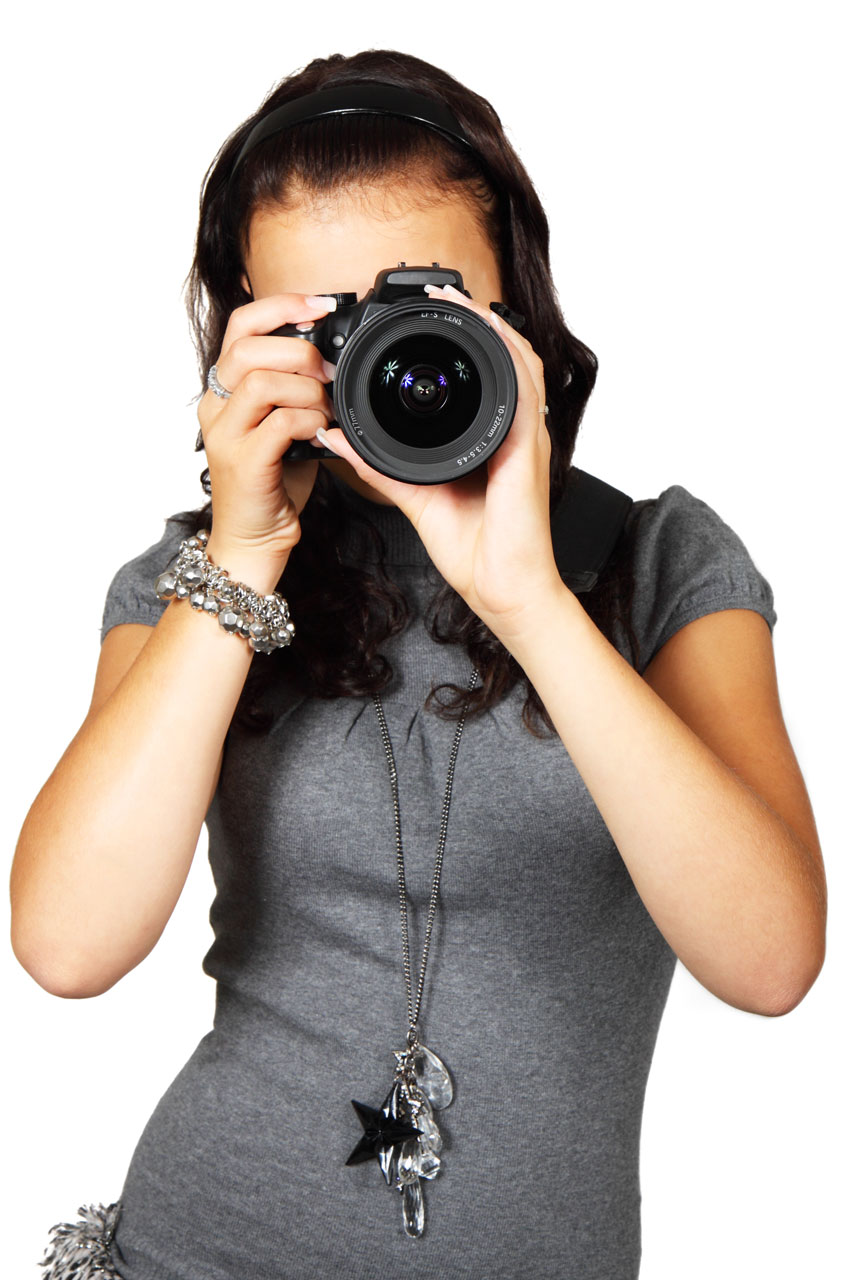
Female photographer isolated on white background.